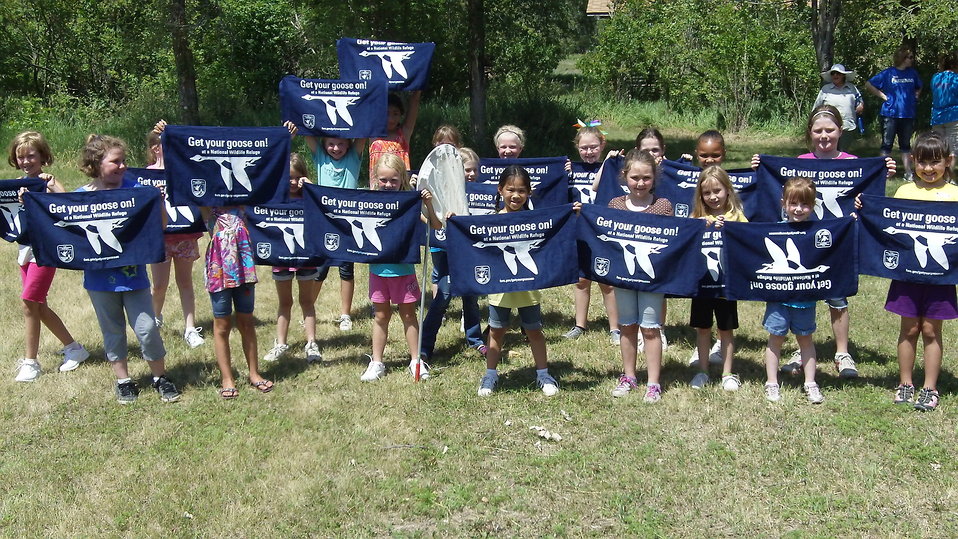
Get Your Goose On!

Photo taken at Huron Wetland Management District in east-central South Dakota.